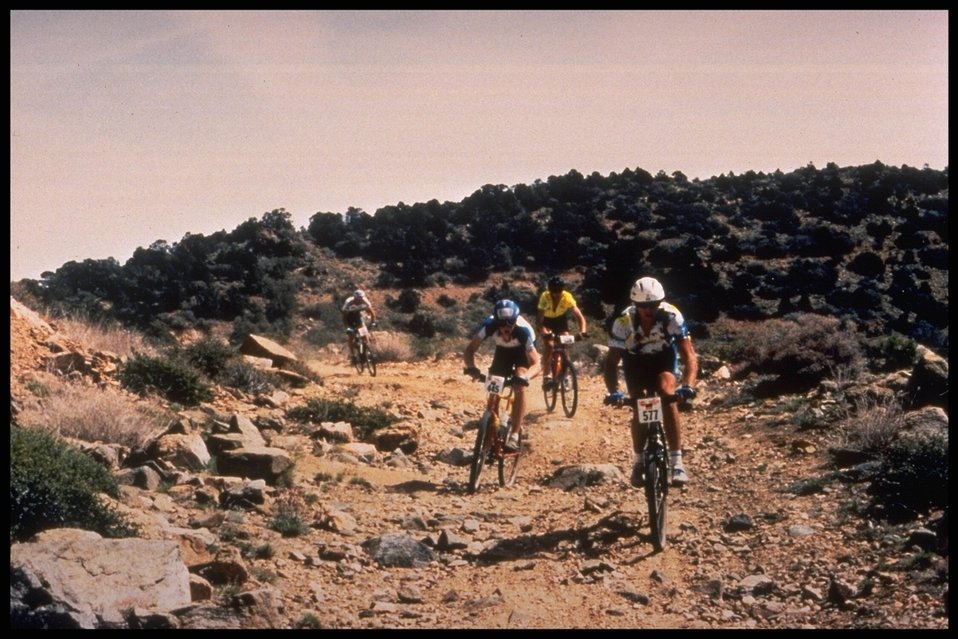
Biking is another great recreational activity to participate in on federal lands.